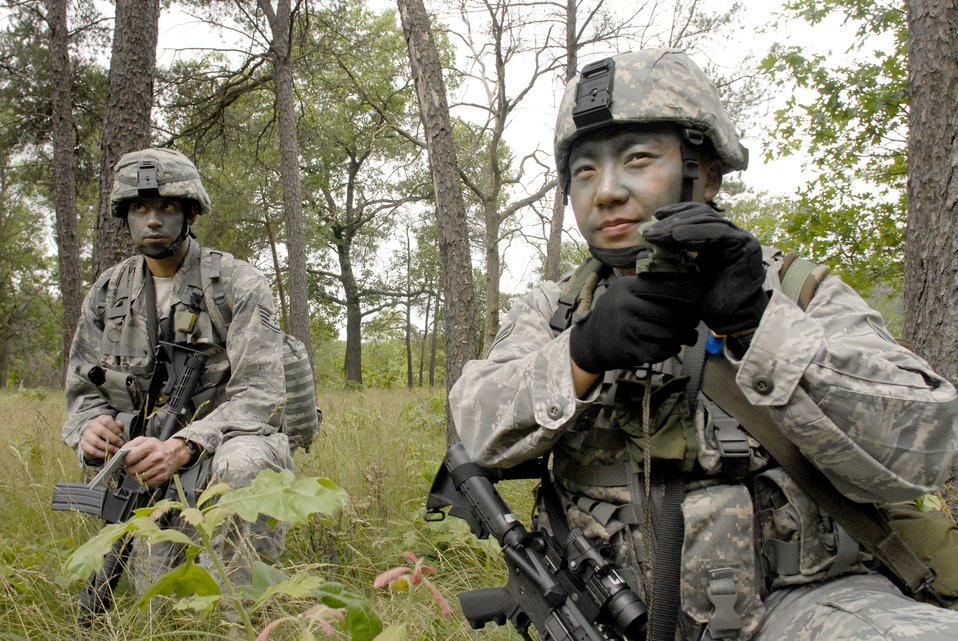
Security forces land navigation exercise

Airman 1st Class Thao Moua (right) and Staff Sgt. Jeff Williams take part in a land navigation exercise June 13, 2010, at Volk Field Combat Readiness Training Center, Wis. Airman Moua and Sergeant Williams are members of the 115th Security Forces Squadron.